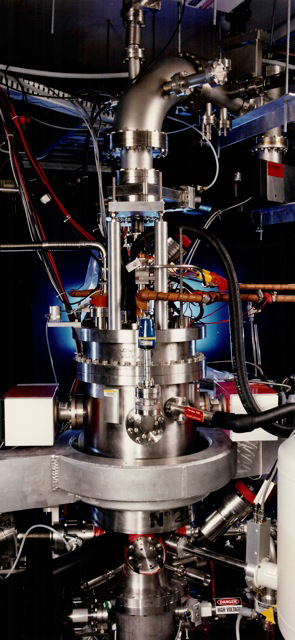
Electron Beam Ion Trap

Observations made with NIST's Electron Beam Ion Trap indicate that in ions with a strongly positive charge, electrons can behave in ways inconsistent with quantum electrodynamics (QED) theory, which describes electromagnetism. While more experiments are needed, the data could imply that some aspects of QED theory require revision.